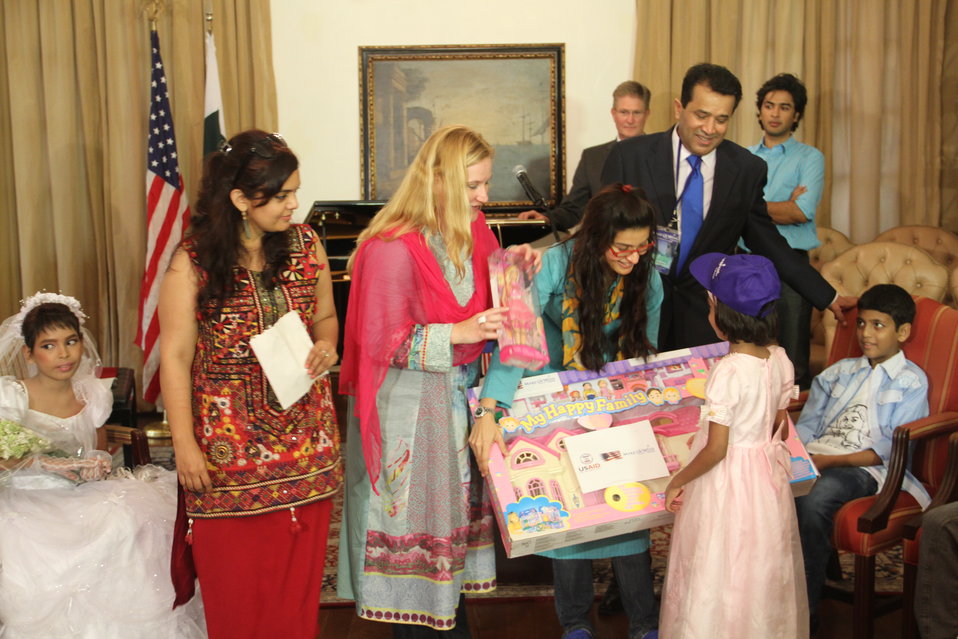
Make-A-Wish

Karachi, July 27, 2011 – Five year-old Rahila receives a doll house at the old residence of the U.S. Consul General. Ms. Rahila, who suffers from blood cancer, wished to have a doll and a doll house. With a grant from USAID, Make-A-Wish Pakistan will grant the wishes of 55 children.